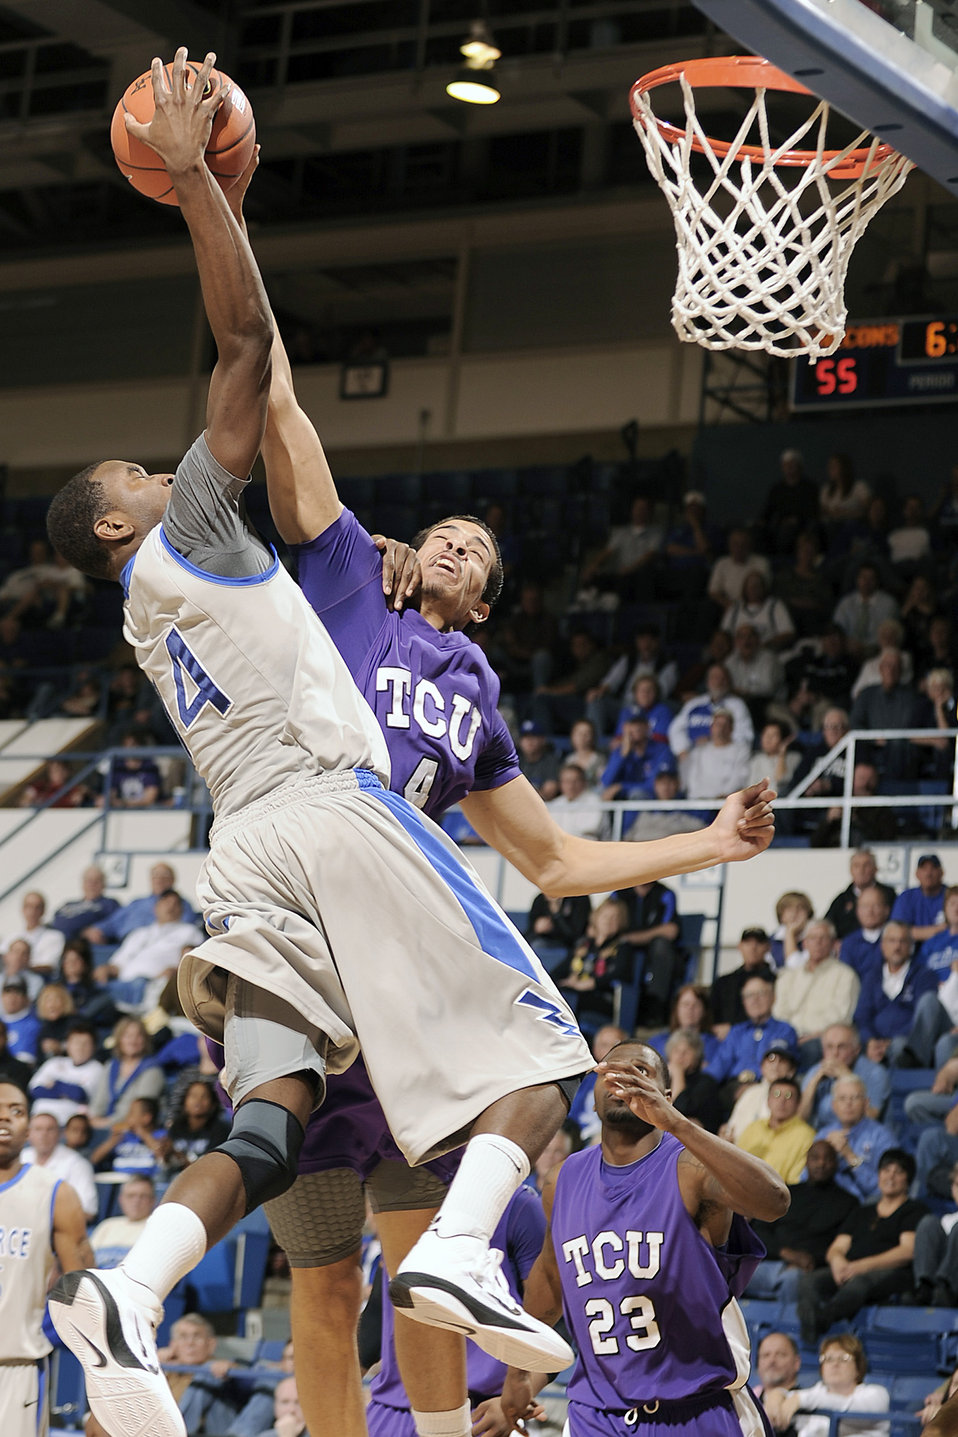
Falcons vs. Horned Frogs

The Air Force Academy's Mike Lyons is fouled by Texas Christian University's Amric Fields during basketball action March 2, 2011, at the Academy's Clune Arena.